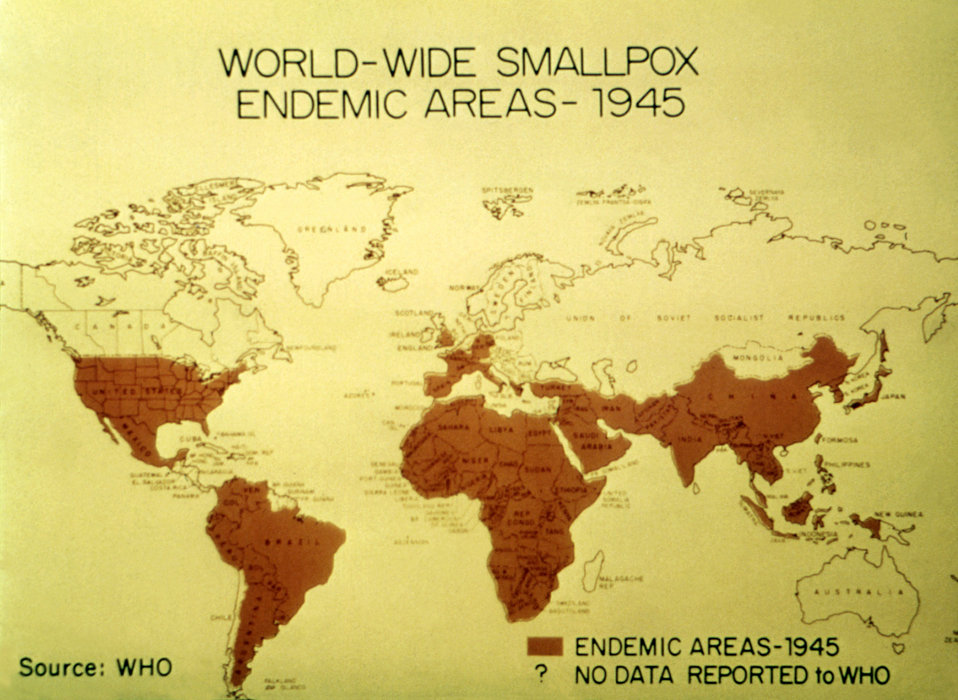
From 1945, this map revealed the worldwide distribution of smallpox, and the countries in which it was endemic.Where Smallpox Comes From?